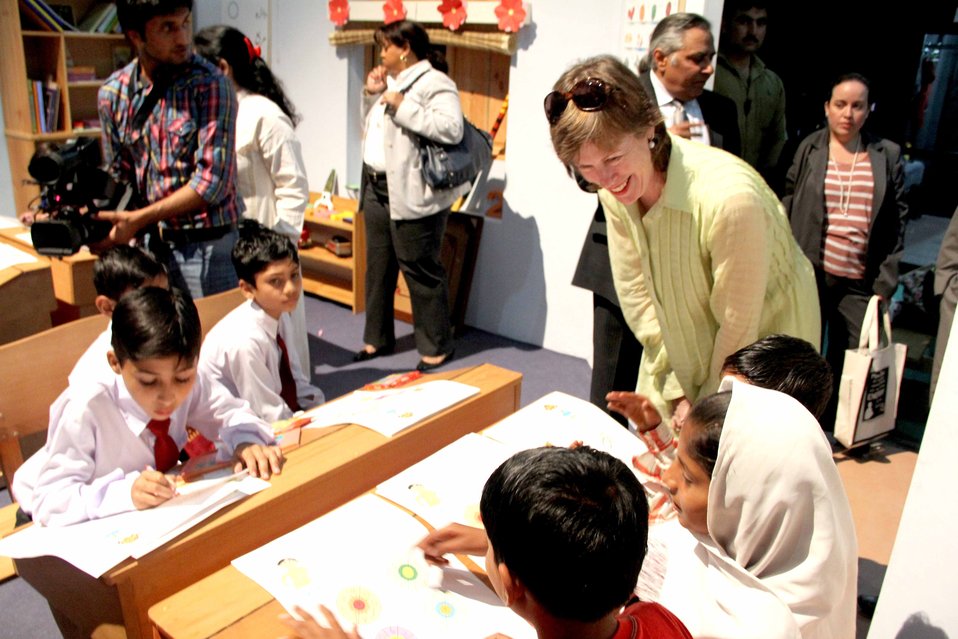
U.S. Ambassador’s Visit to Sim Sim Hamara Highlights U.S. Commitment to Improved Children’s Education in Pakistan at Lahore on 28 April, 2012

Dr. Marliyn Wyatt talk with the childrens